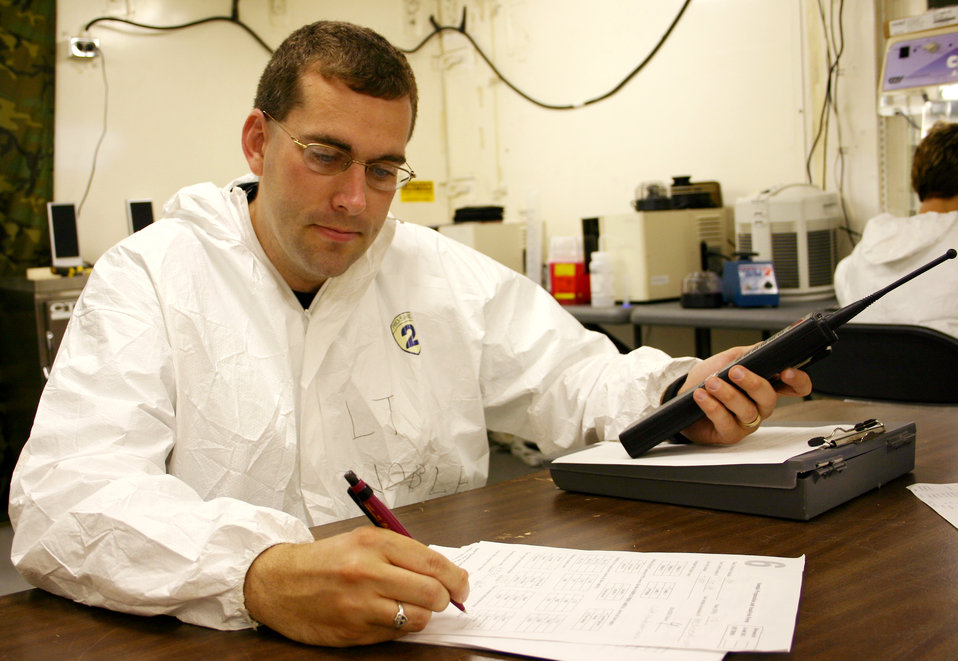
DOD tests 'revolutionary' biological warfare detection device

BROOKS CITY-BASE, Texas -- 1st Lt. Preston Noble collects data produced by the joint biological agent identification and diagnostic system for later analysis. He is an analyst from the Air Force Operational Test and Evaluation Center at Kirtland Air Force Base, N.M.